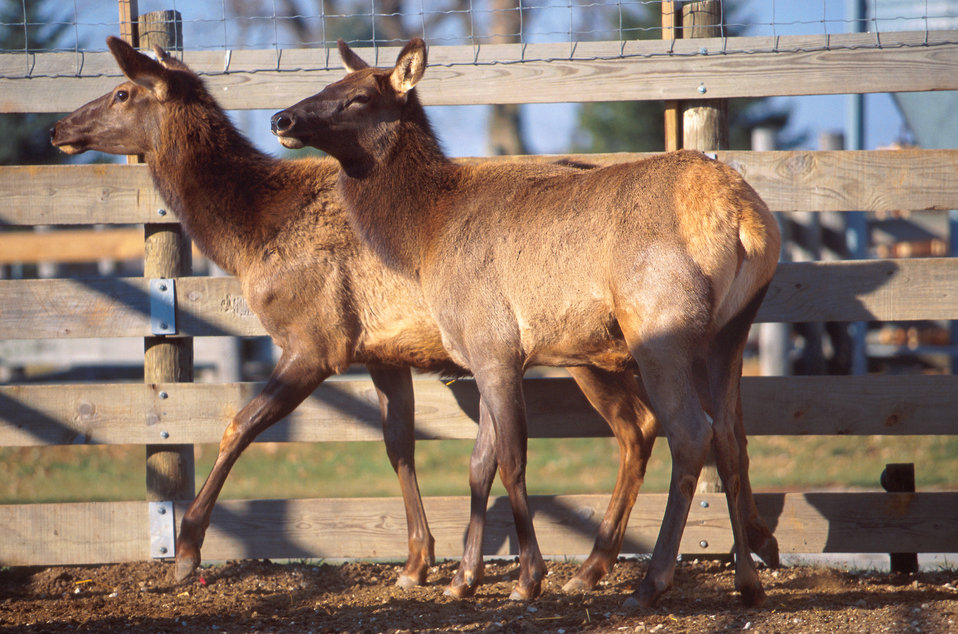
These elk are being in a closed pen awaiting vaccination on Feb. 26, 2010. Bison and elk are the remaining reservoirs of brucellosis in the U.S. A new vaccine (RB51) that protects bison from the disease will be evaluated for protection of elk.